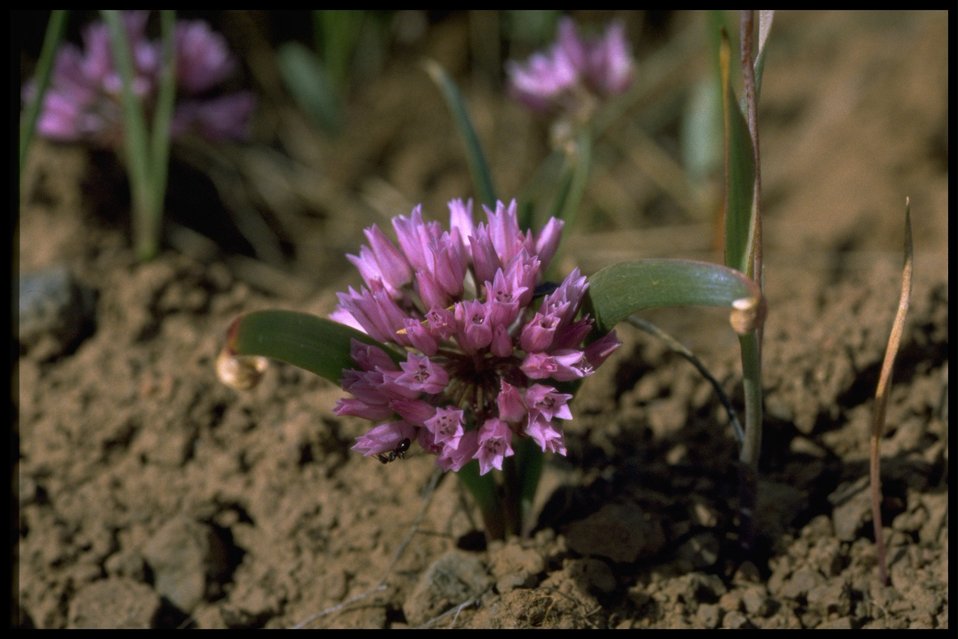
Closeup shot of Tolmie's onion.